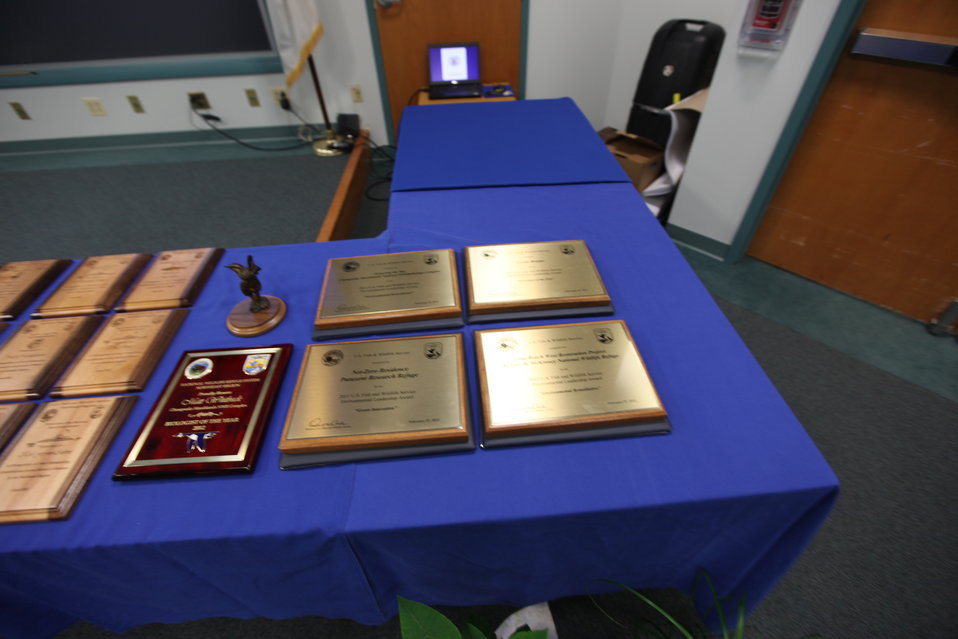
Northeast Region Employee Appreciation Awards